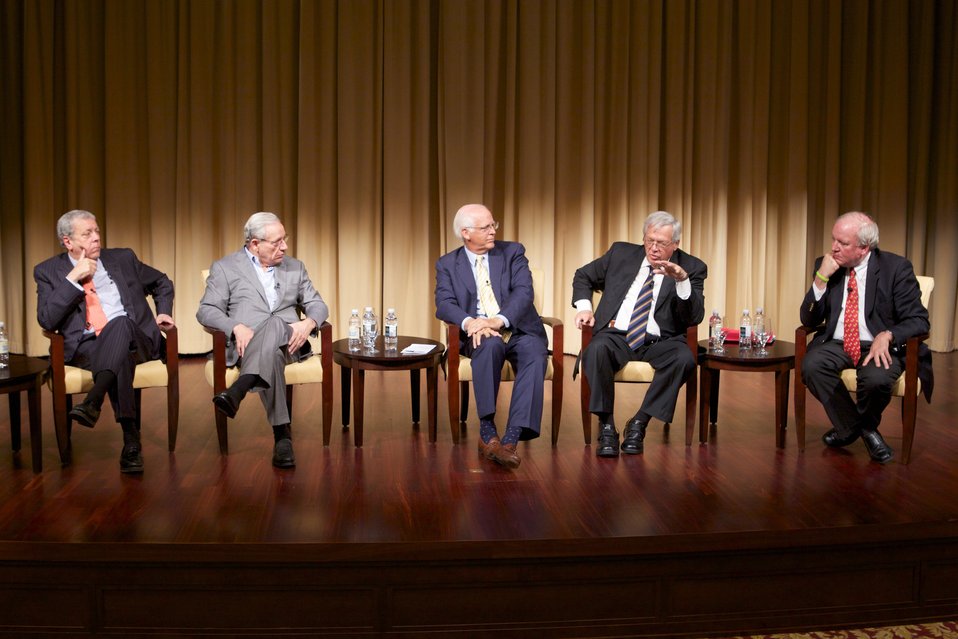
The Role of Congress in International Crises